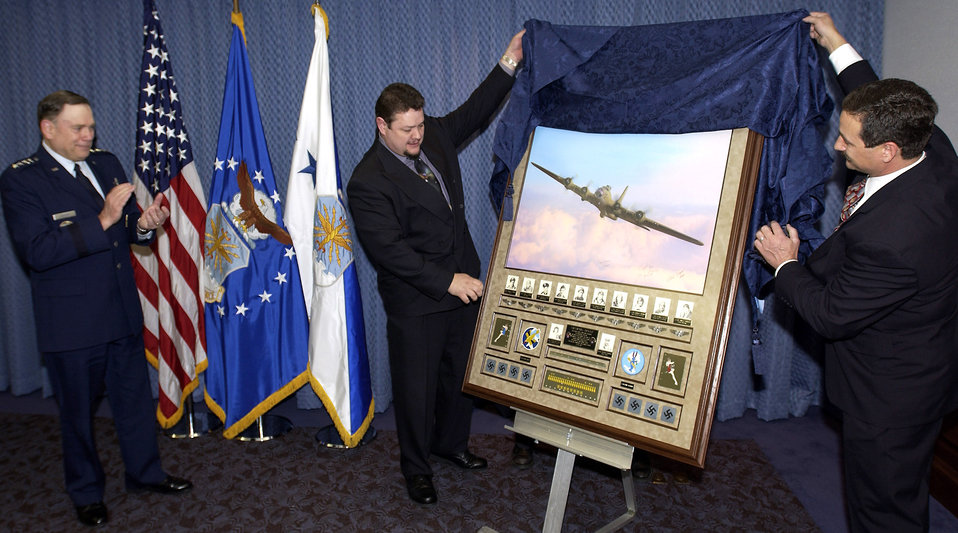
Pretty as a picture

WASHINGTON (AFPN) -- Air Force Chief of Staff Gen. John P. Jumper (left) looks on as artist Mickey Harris (center) and Brent W. Perkins, executive director of the Memphis Belle War Memorial Foundation, unveil Harris' painting of the Memphis Belle during a ceremony in the Pentagon on Jan. 6. The painting of the Boeing B-17 Flying Fortress was dedicated to the Air Force Art Program on behalf of the Memphis Belle Memorial Association and the foundation. The Memphis Belle belonged to the 91st Bombardment Group (Heavy) during World War II and was the first bomber to complete 25 combat missions before returning to the United States.